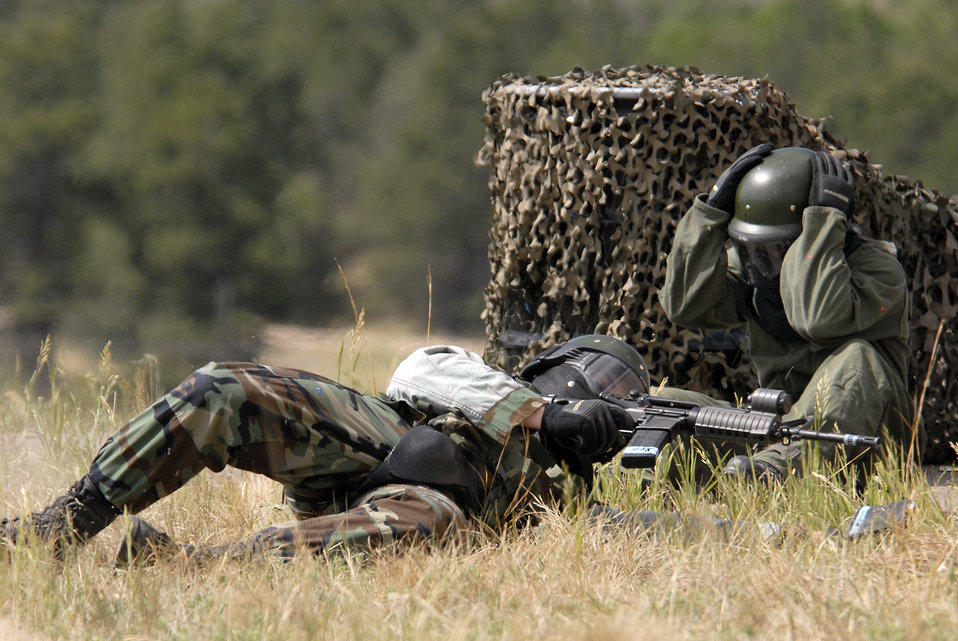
Global Engagement readies Academy cadets for future

U.S. Air Force Academy cadets take cover during a simulated ground attack against the Military Operations Urban Terrain village during the 71-day summer training schedule June 19 at the Academy in Colorado. Approximately 1,200 Academy cadets are going through intensive training this summer to be ready to be globally engaged when they graduate.